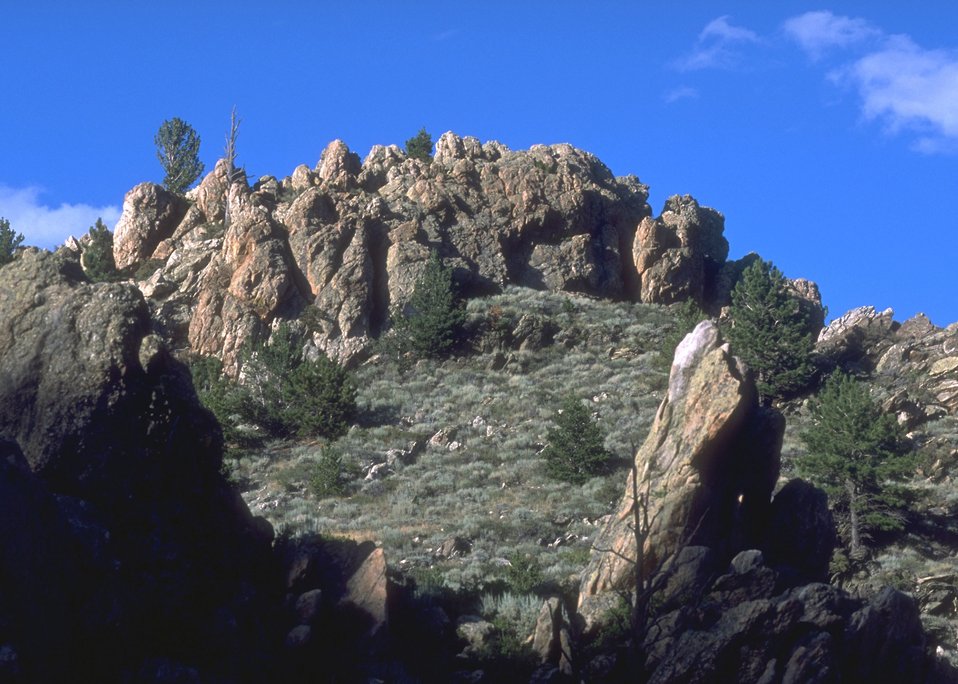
Landscape along the Alcova/Seminoe Back Country Byway, Rawlins Field Office.